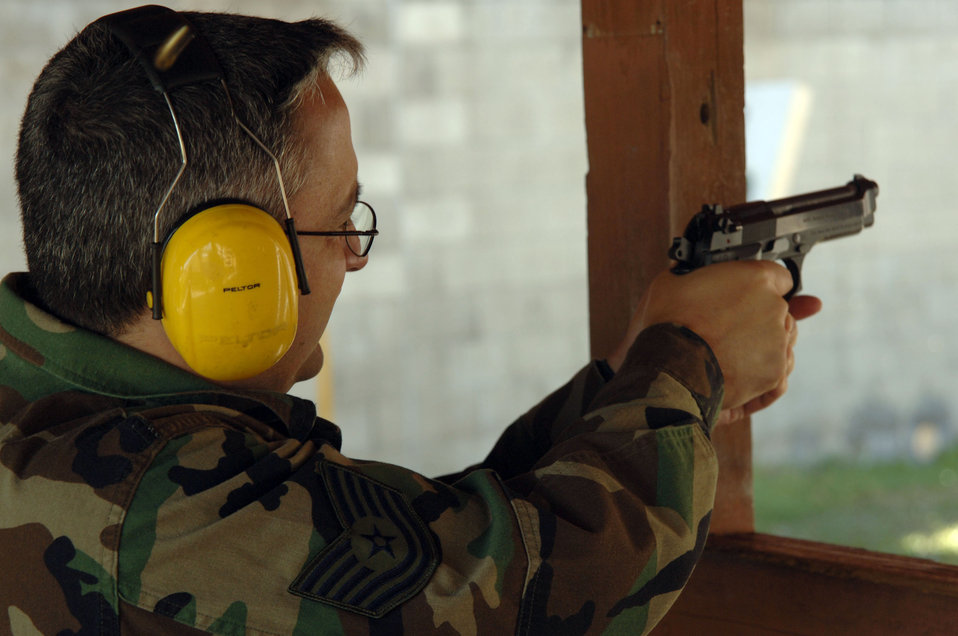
Combat arms training

Tech. Sgt. Tony Busquets fires a Beretta M-9 pistol during a combat arms training and maintenance class at MacDill Air Force Base, Fla., on Monday, March 27, 2006. The instructors teach servicemembers and Department of Defense civilians how to maintain and safely operate fire arms. Sergeant Busquets is with the 310th Airlift Squadron.